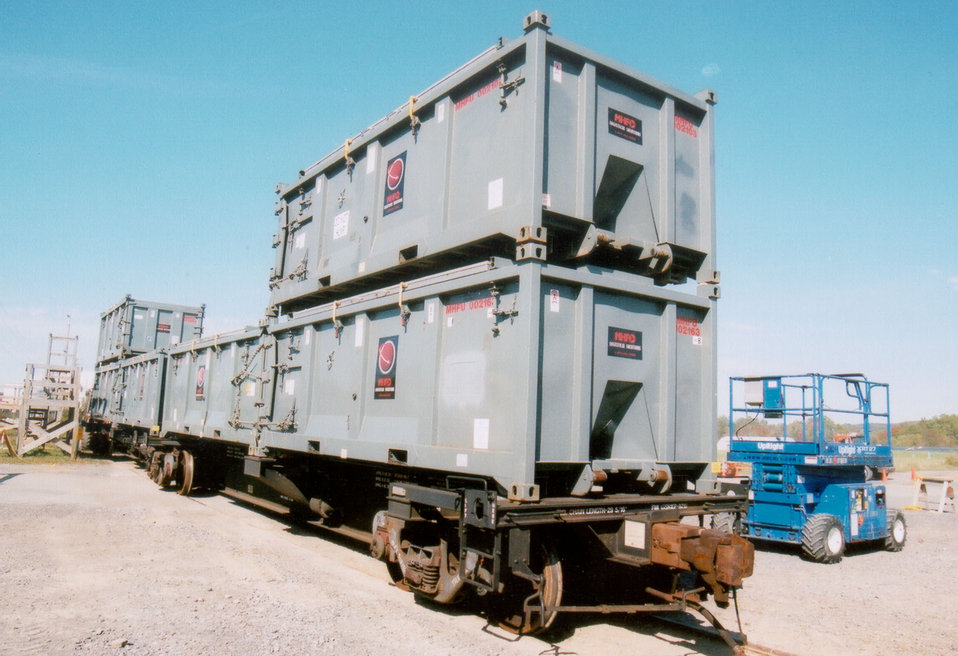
Recovery Act Funds Disposal of West Valley Radioactive Waste

Rail shipments maximize efficiency: The WVDP is getting the most out of its Recovery Act funding by shipping containers of waste cross-country, mostly by rail. The shipments begin at the WVDP on trucks, but later move to flatbed railcars where they are stacked.